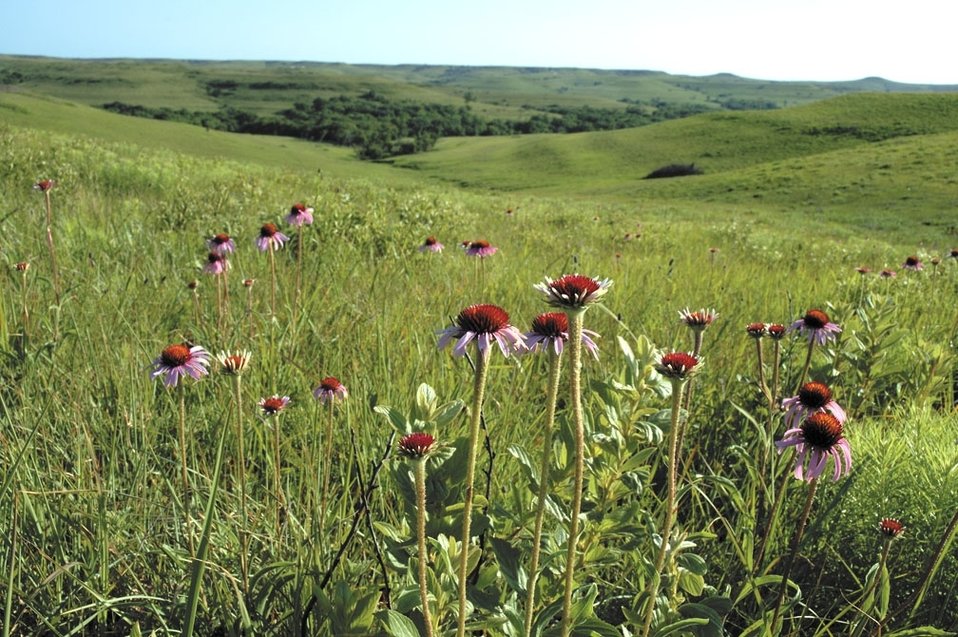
Black Sampson Vista

Black sampson prairie vista, part of the Flint Hills Conservation Area was approved. One million acres of tallgrass prairie habitat for grassland-dependent birds will be conserved through conservation easements.